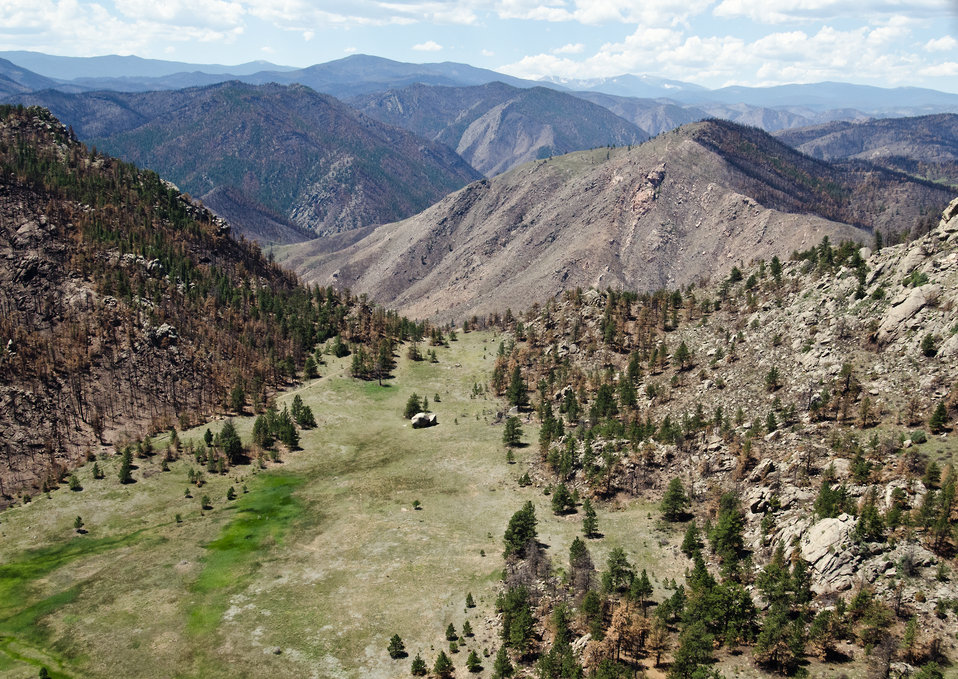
This is the Hewlett Gulch Trail, in the Poudre Canyon area, on Friday, July 20, 2012, near Fort Collins, Colorado. It was the start point of the Hewlett Gulch Fire on May 14. This mountain ridge saddle had a scenic view of the Roosevelt National Forest. It is also tinder dry and at a place where the slopes tend to funnel wind through this low point. The blackened areas clearly show the spread of the fire influenced by wind, terrain and available fuel. At its peak more than 400 firefighters were battling fires pushed by 50 mph winds. When the last embers were cooled, more than 12-square miles lay blacked at a cost of approximately 3.2 million dollars to fight. The aerial distribution of straw has successfully kept the Seaman Reservoir, drinking water resource for the City of Greeley, clean and clear. Forest Service lands receive straw, while private and other lands receive a seed mix and straw to promote ground cover plant growth on ash-covered lands. In total, 1,800 tons of straw will be applied during the 14-day operation. One quarter of the cost was paid by the City of Greeley and the U.S. Department of Agriculture funded the remainder. Unmitigated areas have turned famous Colorado clear water to nearly black flows of water heavily laden with ash, silt, and burnt debris that recent thunderstorms have already washed down from the mountainsides.